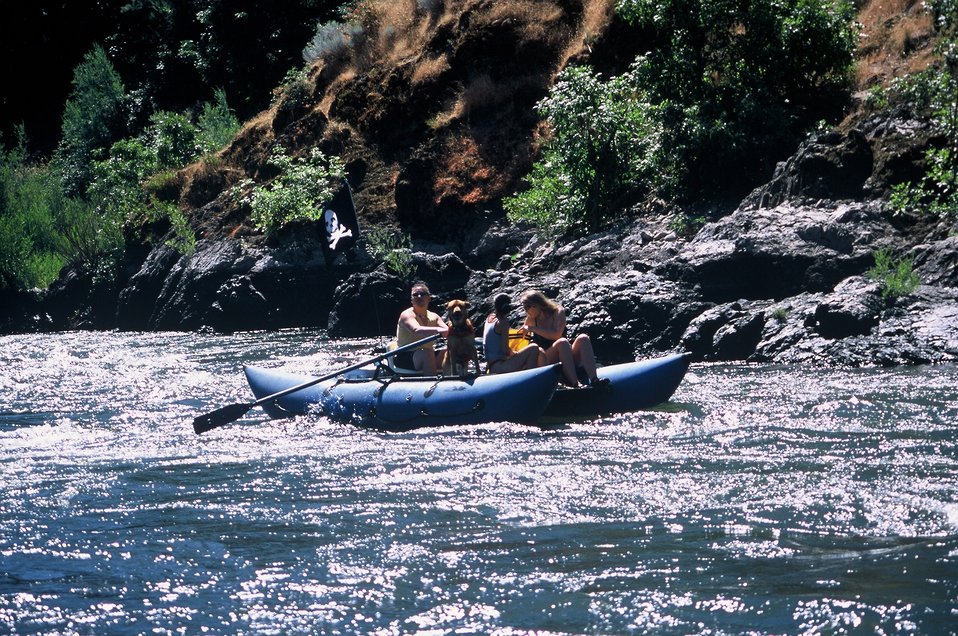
Hog Creek